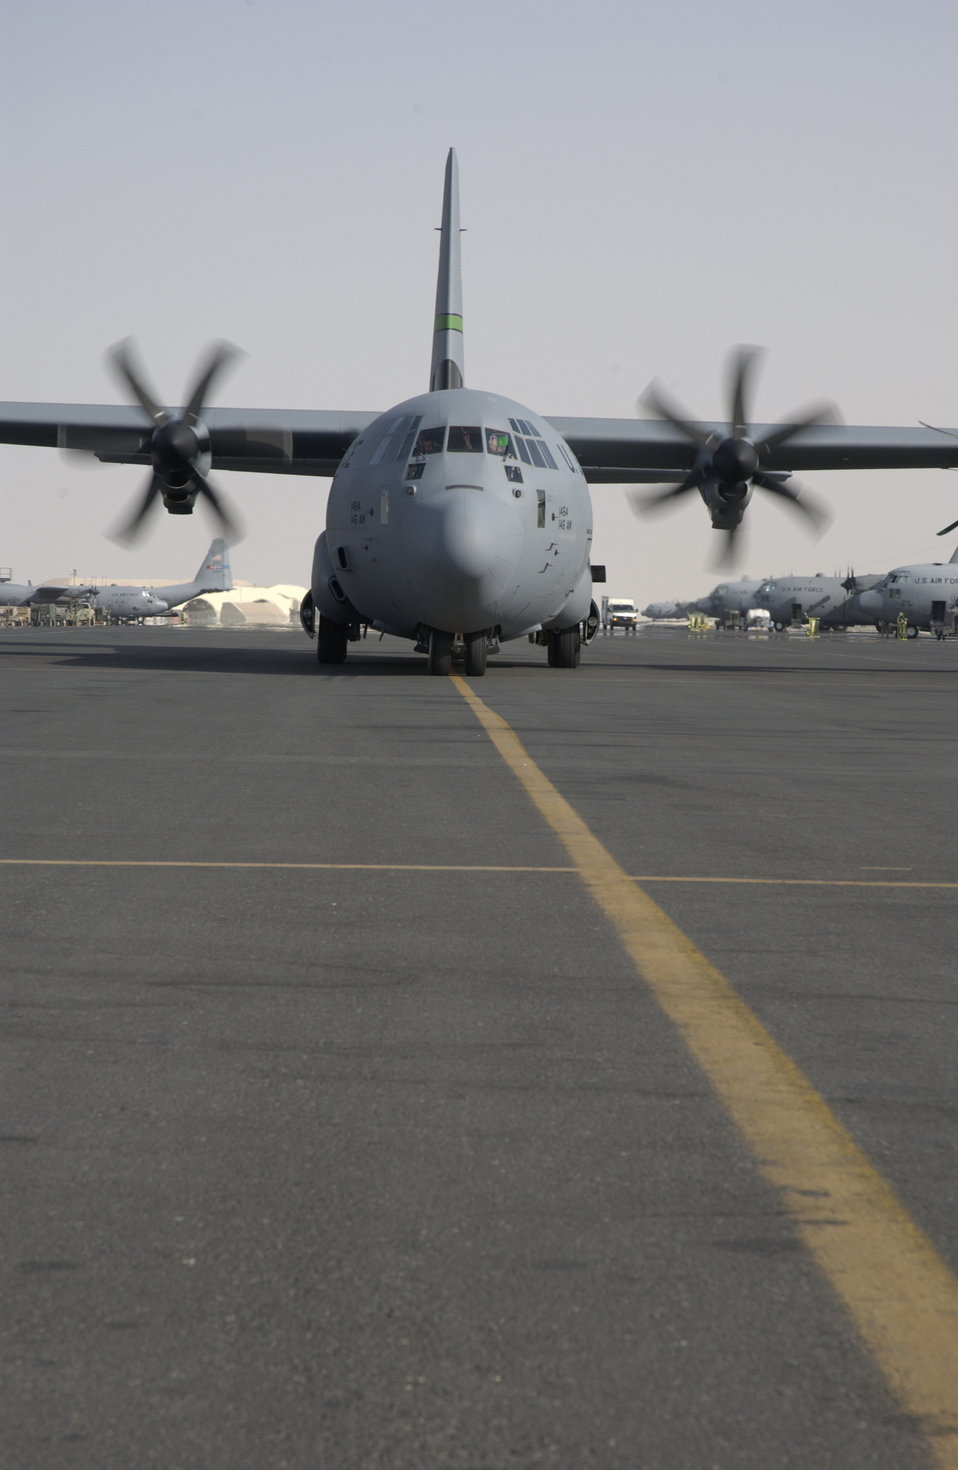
Latest C-130J evolution arrives on desert ramp

SOUTHWEST ASIA -- A stretch version C-130J Hercules from the California Air National Guard's 146th Airlift Squadron taxis on a ramp at a forward-deployed location here while supporting missions in Iraq, Afghanistan and the Horn of Africa. The J-model is the latest upgrade to the C-130 cargo plane series.